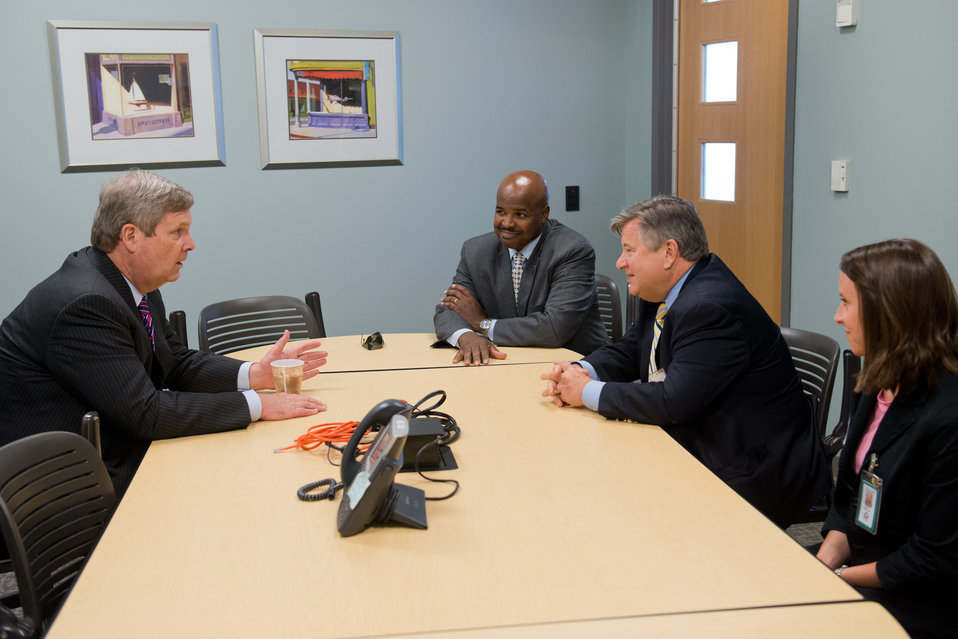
Agriculture Secretary Tom Vilsack (left) confers with (left-to-right) U.S. Department of Agriculture (USDA) Natural Resources Conservation Service (NRCS) State Conservationist Terry Cosby, USDA Ohio Rural Development (RD) State Director Tony Logan, and USDA Ohio Farm Service Agency (FSA) Conservation Key Specialist Brandi Koehler prior to a tour of G.E. Aviation Headquarters in suburban Cincinnati, OH on Wednesday, June 27, 2012. Secretary Vilsack was in Ohio to highlight USDA’s collaboration with the Ohio Aerospace Institute, air carriers and producer groups to develop a Midwest-regional approach to providing renewable jet fuel at GE Aviation’s Cincinnati-area facilities.